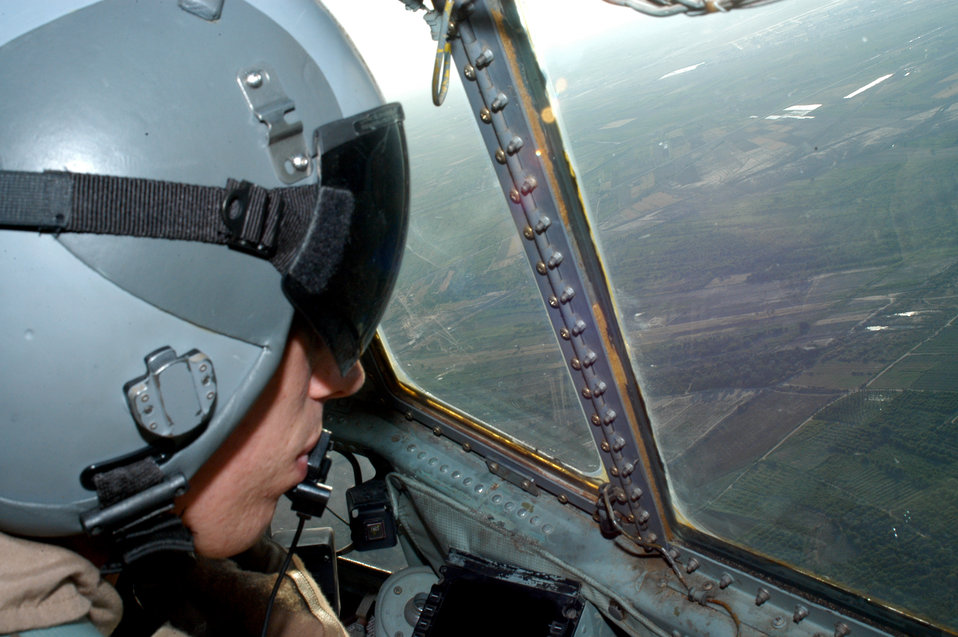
Look out below ...

OVER IRAQ -- Capt. Eric Alderman keeps an eye out for threats before landing at Balad Air Base, Iraq, during a tactical airlift mission. Captain Alderman is assigned to the 737th Expeditionary Airlift Squadron and is deployed from Pope Air Force Base, N.C.